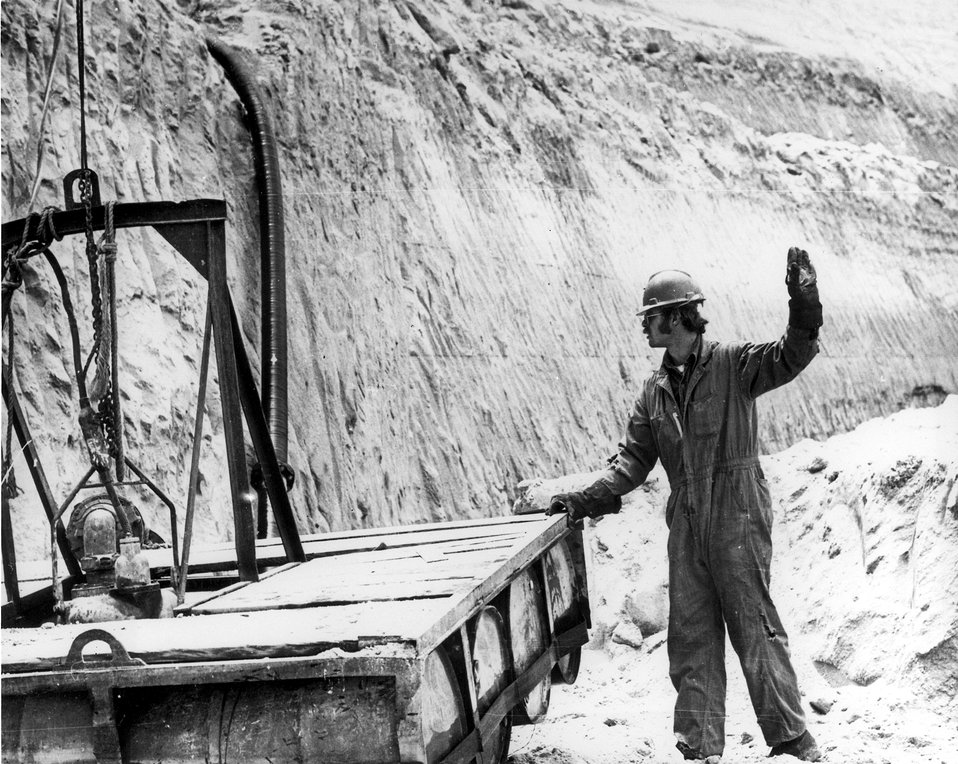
Eric Hansen's day begins at 3:30 am at his home in Riverton, Wyoming when he wakes to catch a bus to Utah International's Lucky Mc Mine, where he starts at 6 am in charge of pumping water from pits at Lucky Mc uranium mines. c. 1976